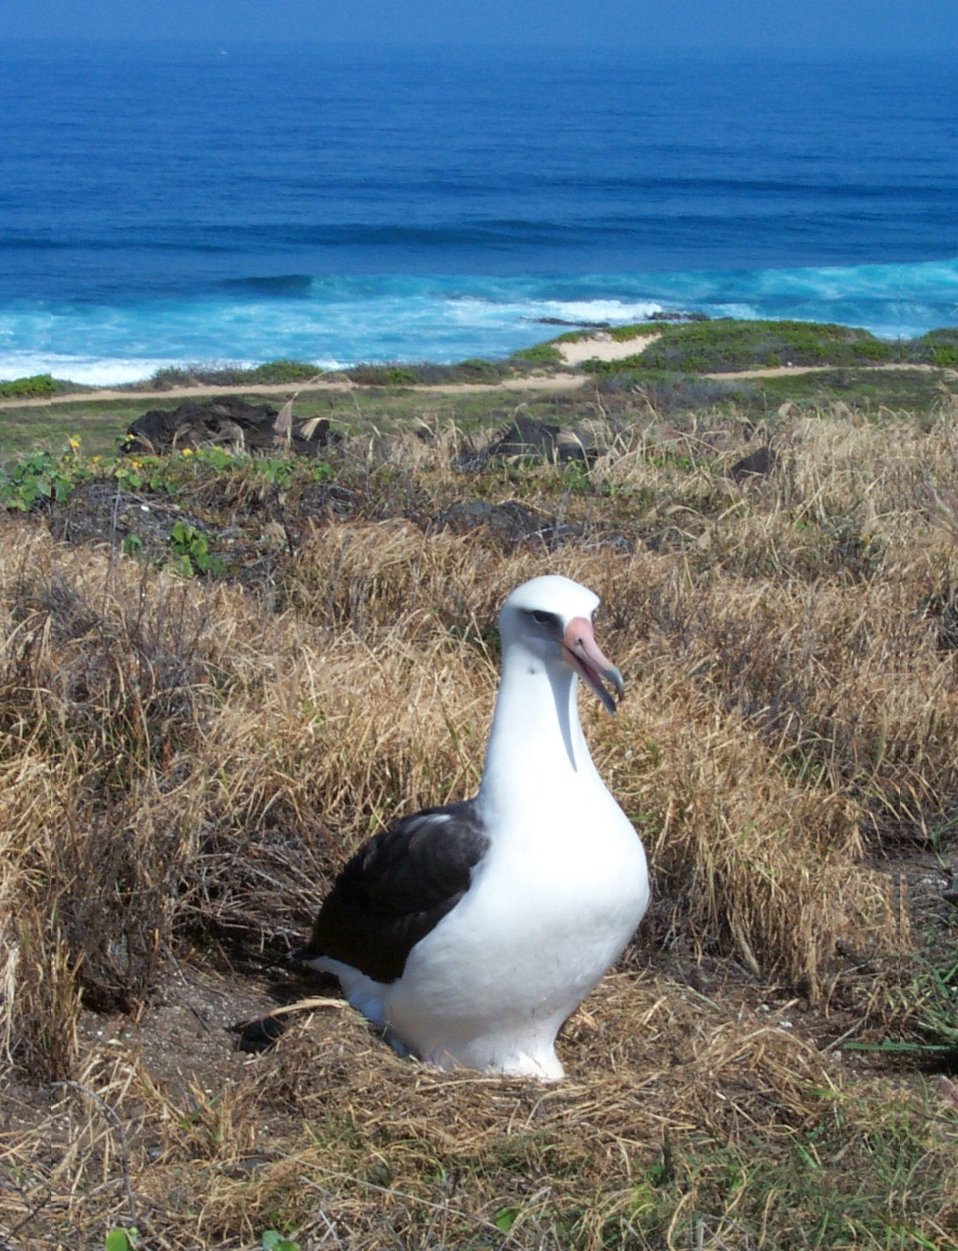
Laysan albatross, Credit USFWS Chris Swenson

USFWS Coastal Program in Hawaii worked with partners to construct a predator fence at Ka‘ena Point Natural Area Reserve on O‘ahu, benefitting the Laysan albatross and other native species.